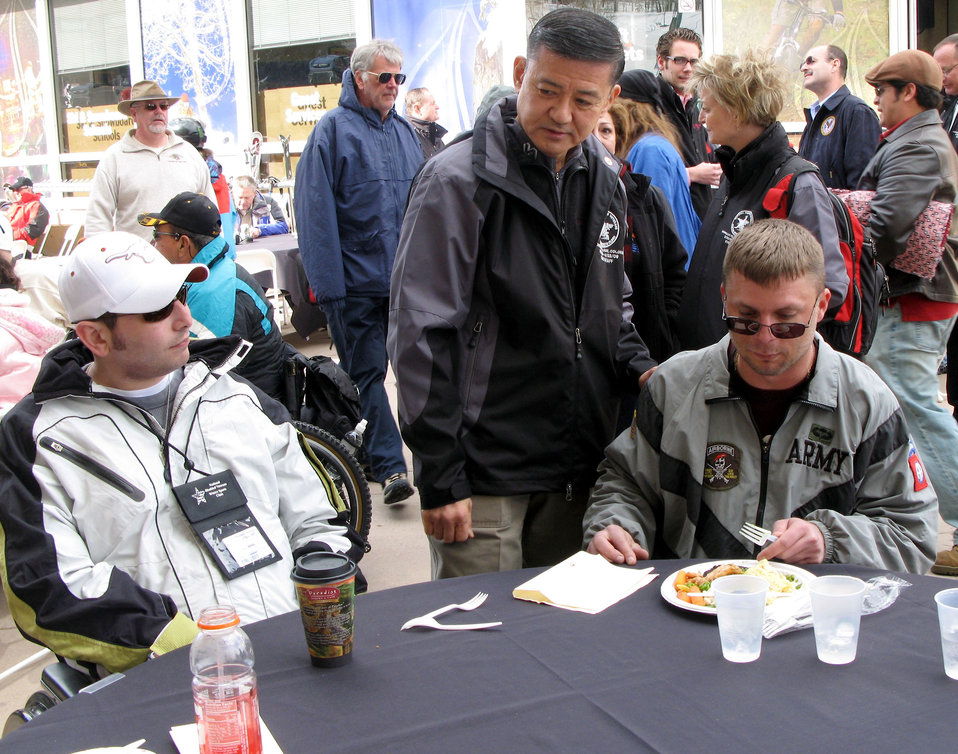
National Disabled Veterans Winter Sports Clinic

Veterans Affairs Secretary Eric K. Shinseki (center) chats with participants in the 23rd annual National Disabled Veterans Winter Sports Clinic at Snowmass Village, Colo., during a March 29